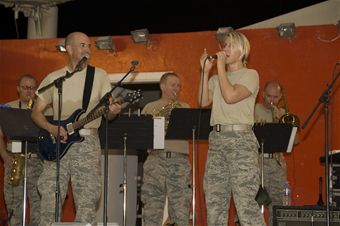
Singing for the troops

Senior Airman Jamie Horner caught the eye of the Air Force Central Band’s director of operations after singing in the finals of the 379th Force Support Flight singing competition,